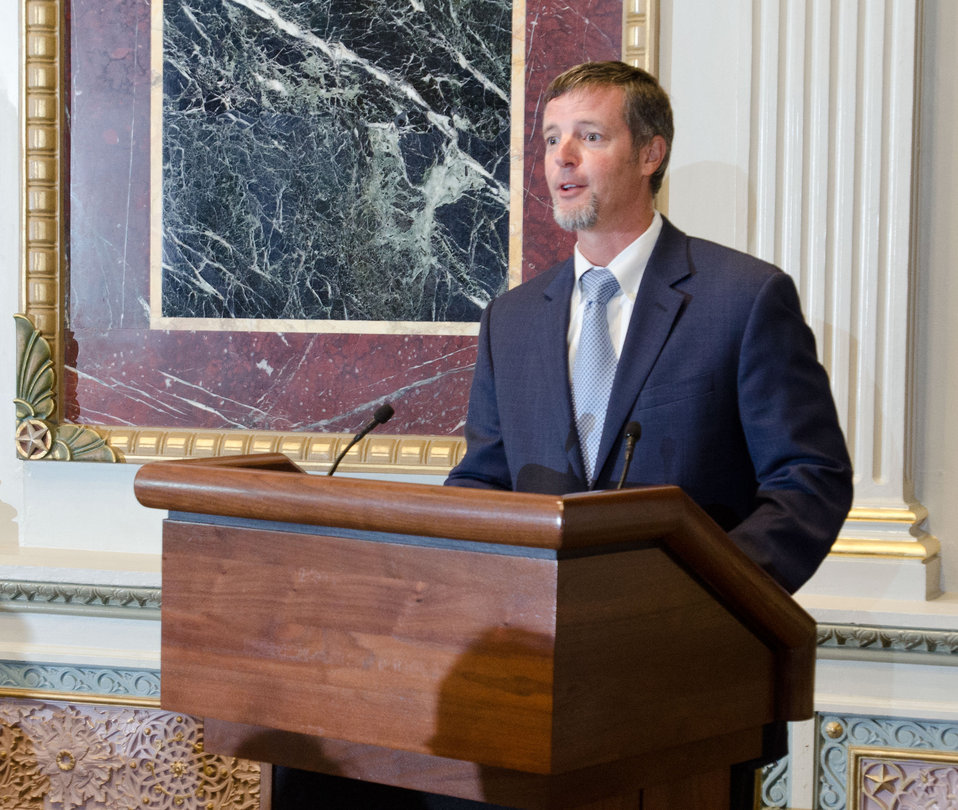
White House Domestic Policy Council Rural Affairs Senior Policy Advisor Doug McKalip makes closing remarks at the Champions of Change event at the Executive Office Building in Washington, D.C. on Tuesday, Oct. 9, 2012. The Champions of Change program was created to honor ordinary Americans doing great work in their communities. Each week, a different sector is highlighted and groups of Champions, ranging from educators to entrepreneurs to community leaders, are recognized for the work they are doing to serve and strengthen their communities.